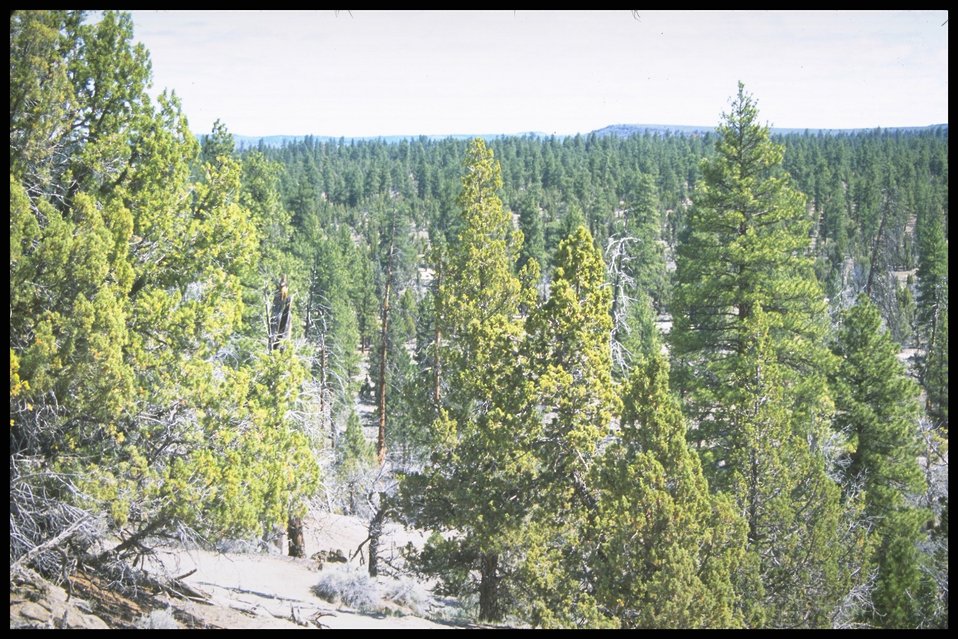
Lost Forest, Lakeveiw District.